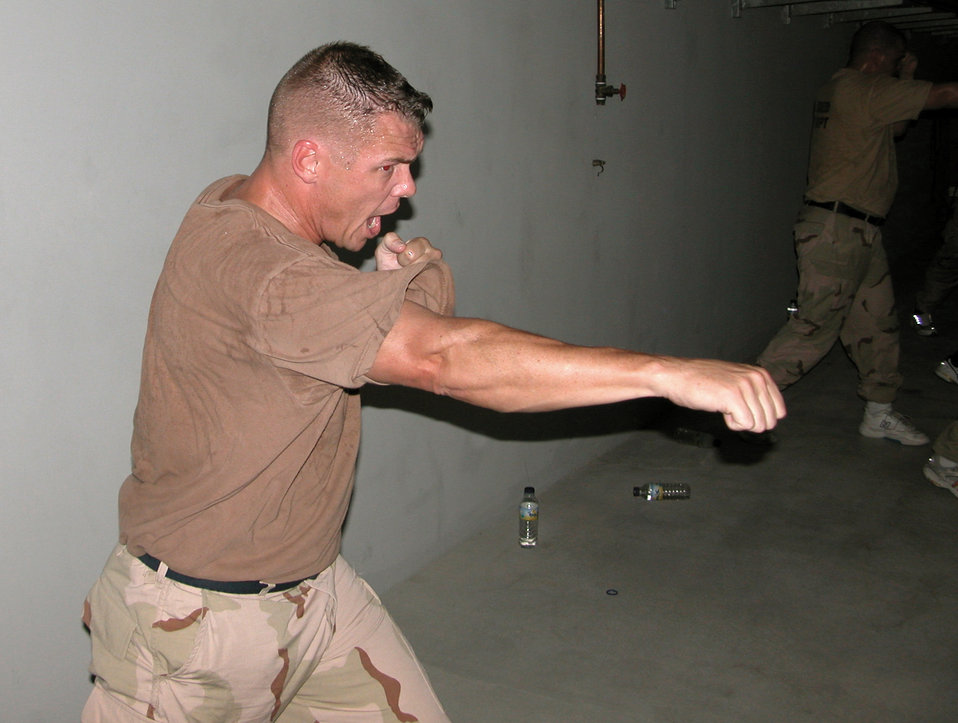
Deployed Marine teaches Aimen martial arts

SOUTHWEST ASIA -- Tech. Sgt. Scott Butler, a deployed firefighter, practices during the final Marine Corps Martial Arts Program class before he and fellow firefighters were certified as